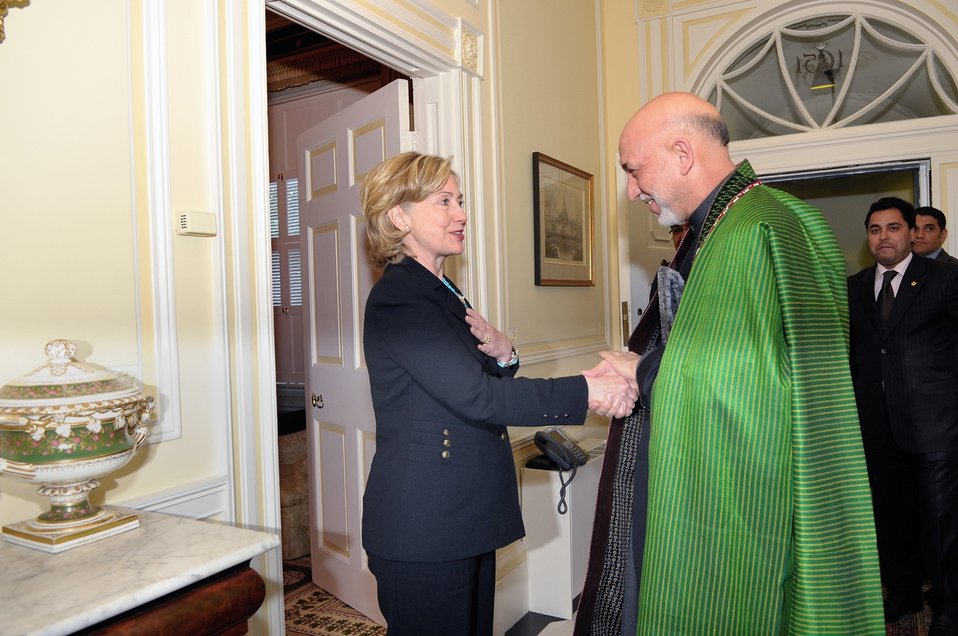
Secretary Clinton Welcomes Afghan President Karzai to Dinner

U.S. Secretary of State Hillary Rodham Clinton welcomes President of the Islamic Republic of Afghanistan Hamid Karzai at the Blair House, Washington, D.C., May 10, 2010.